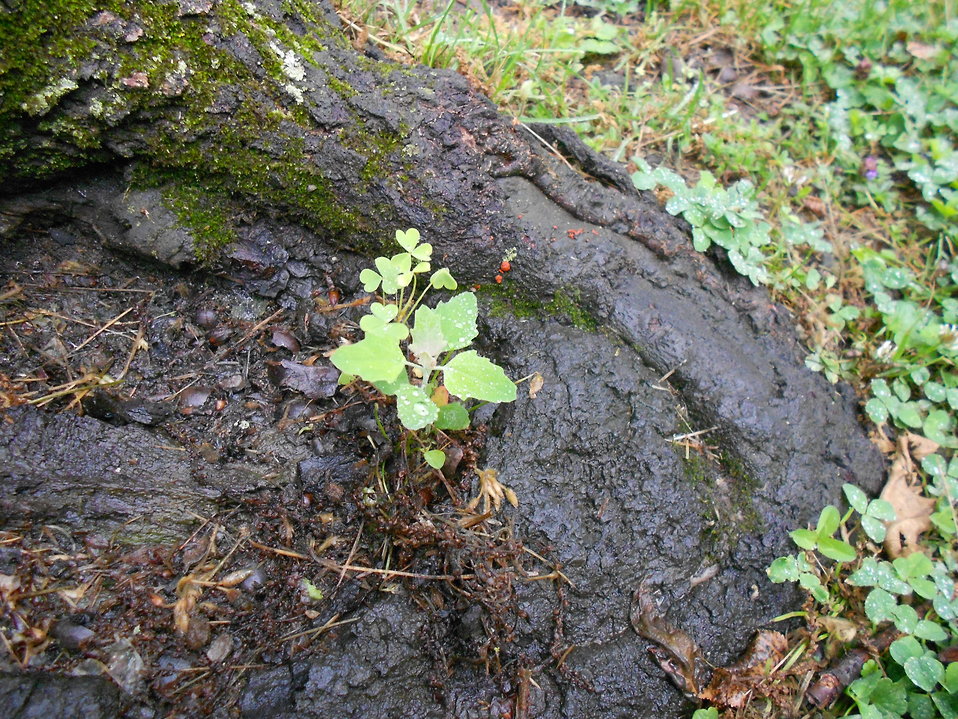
Base of a tree

Credit: USFWS

'The leaf kind of looks like a tree.' -Walter Budziszewski